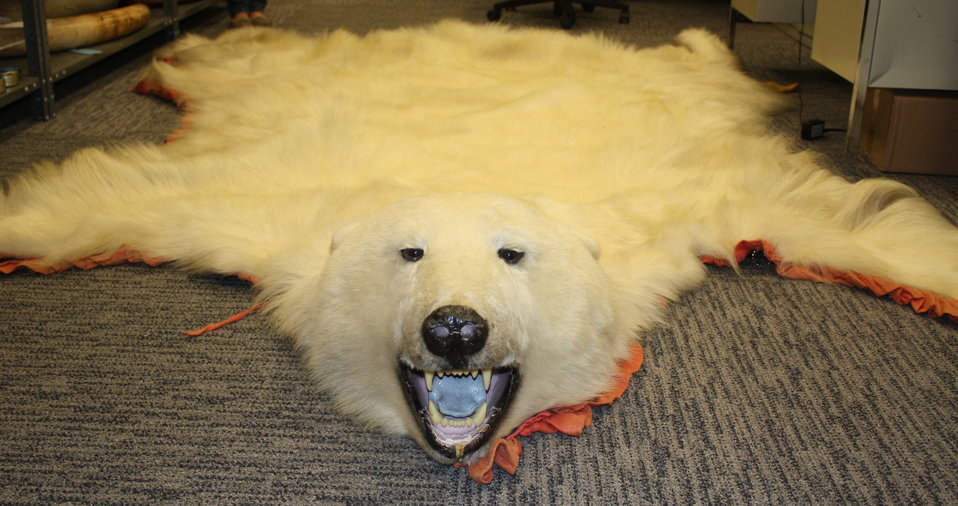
Polar bear skin seized in N.J.